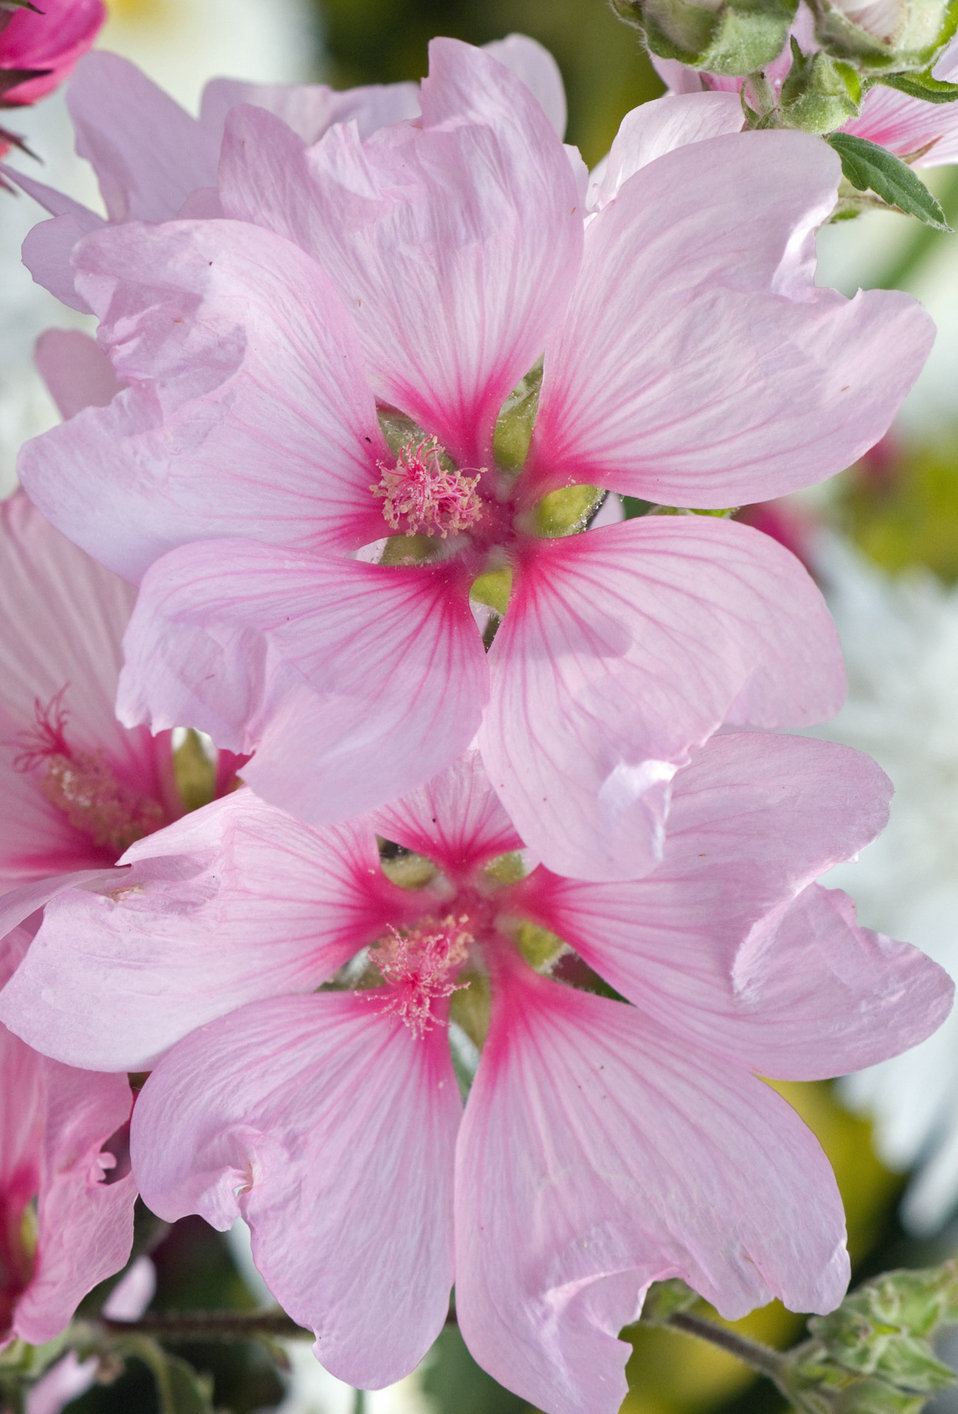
Pink flowers

Beautiful close-up of pink flower blooms.